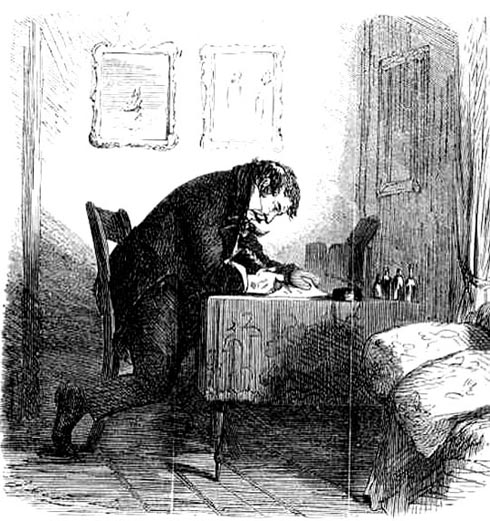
Great Expectations, Joe Gargery is learning to read, by John McLenan (1861). Français : Les Grandes Espérances, Joe Gargery apprend à lire, par John McLenan (1861).